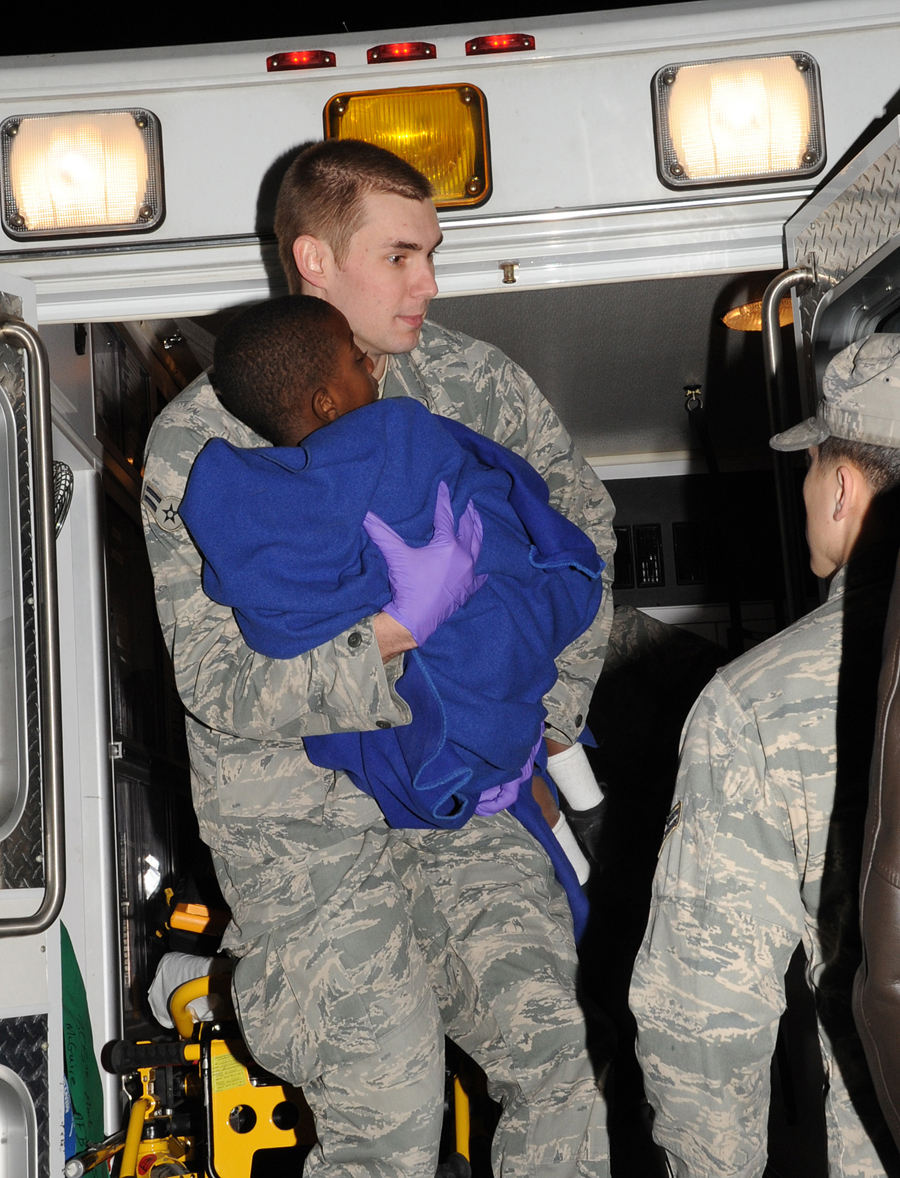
Haiti evacuees at JB MDL

JOINT BASE MCGUIRE-DIX-LAKEHURST, N.J. – Airman 1st Class Brian Long, 87th Medical Group, carries a Haitian child off an ambulance at the passenger terminal here Saturday shortly after 44 survivors arrived from Port-au-Prince, Haiti. Airmen provided basic medical care to evacuees as needed and transported those with more serious injuries to a local hospital.